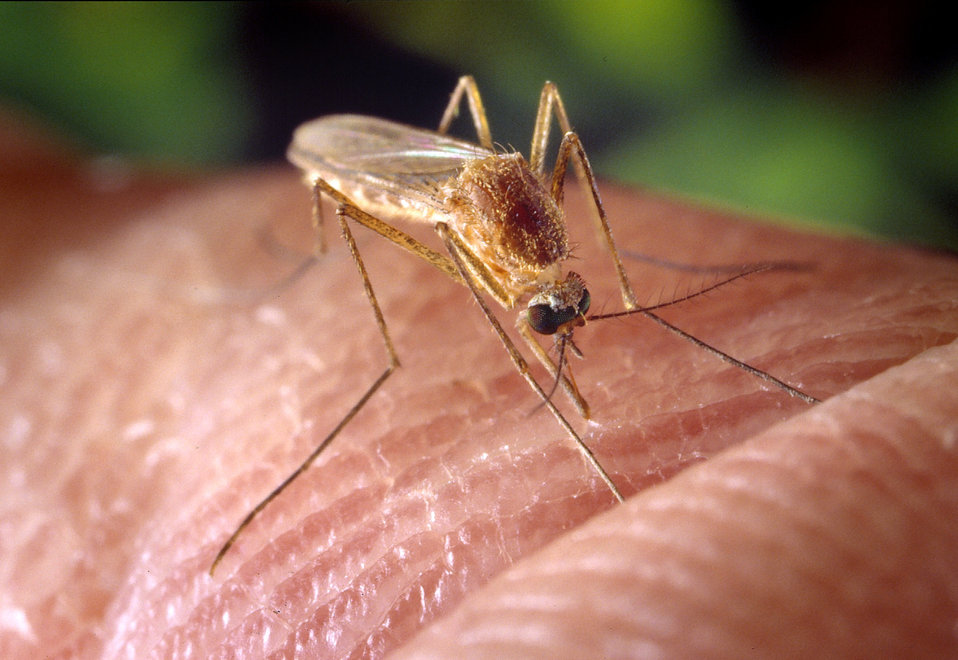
A Culex quinquefasciatus mosquito on a human finger.